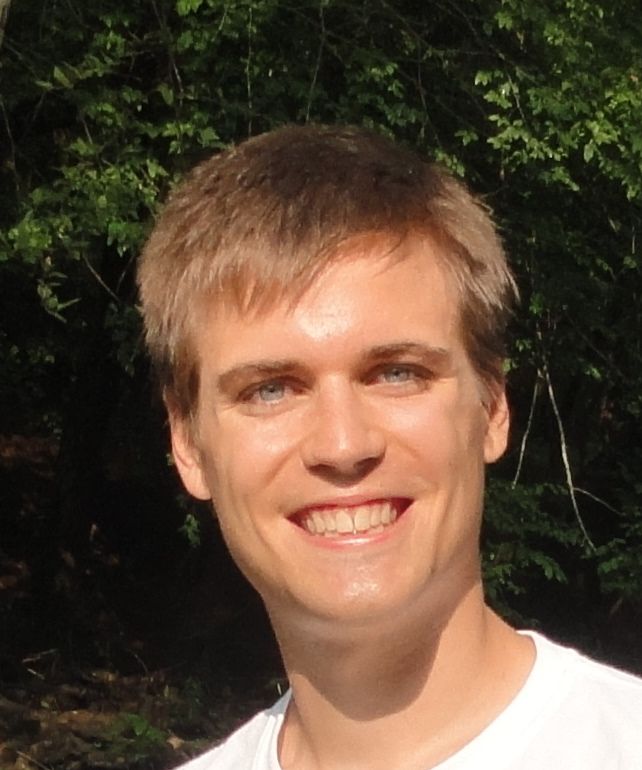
Ben Edwards

FWS Wilderness Fellow Ben Edwards